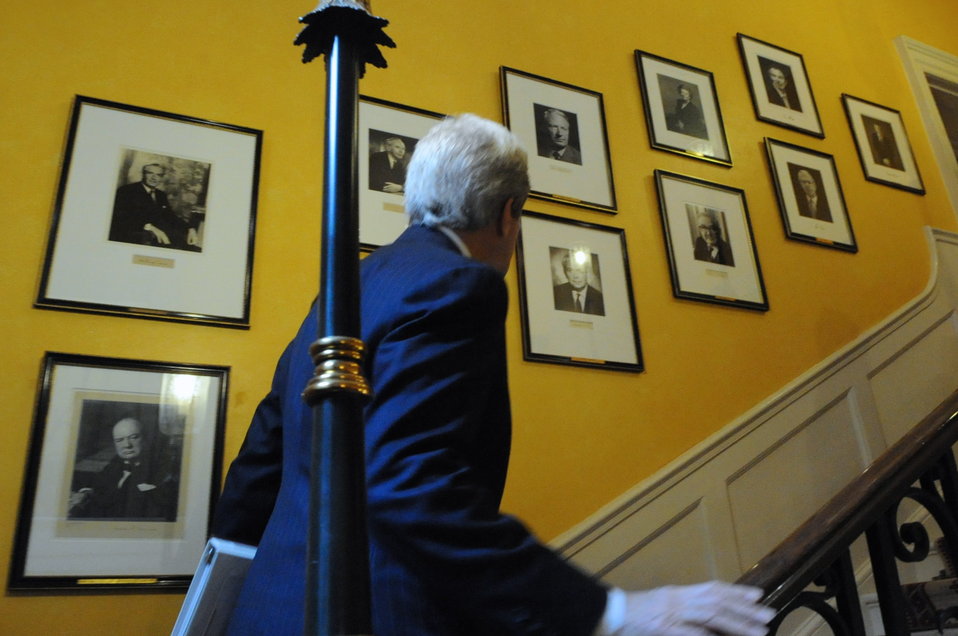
Secretary Kerry Looks at British Prime Minister Portraits in No. 10 Downing Street

U.S. Secretary of State John Kerry, walking beside British Prime Minister David Cameron, passes the portraits of past Prime Ministers as he climbs the stairs to the second floor of No. 10 Downing Street in London, United Kingdom, on March 14, 2014.